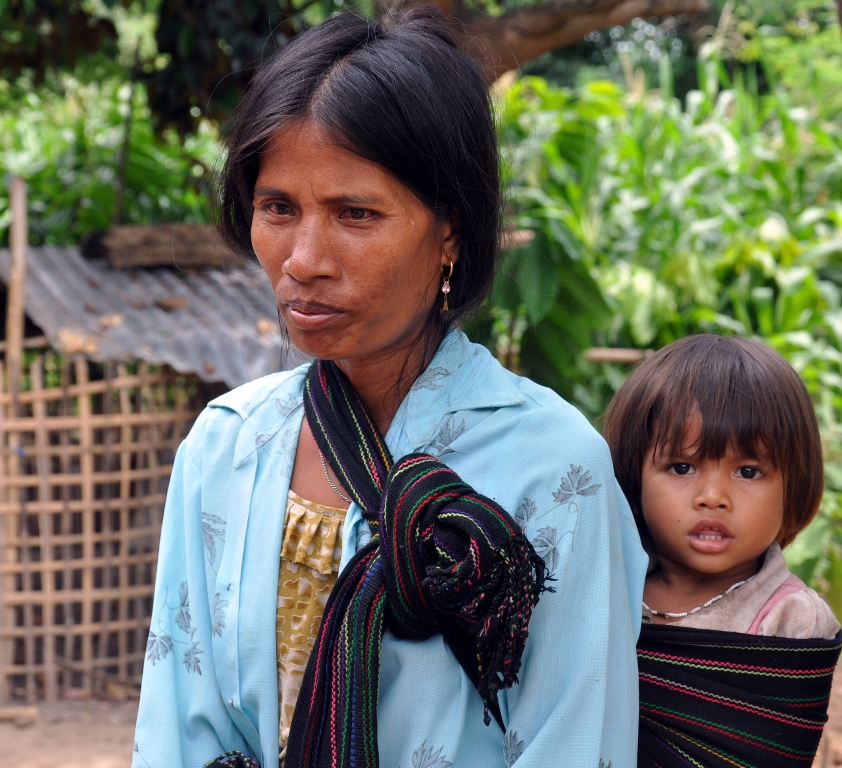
Farmers and their families in rural, central Vietnam profit from cocoa farming with USAID-sponsored training and support.